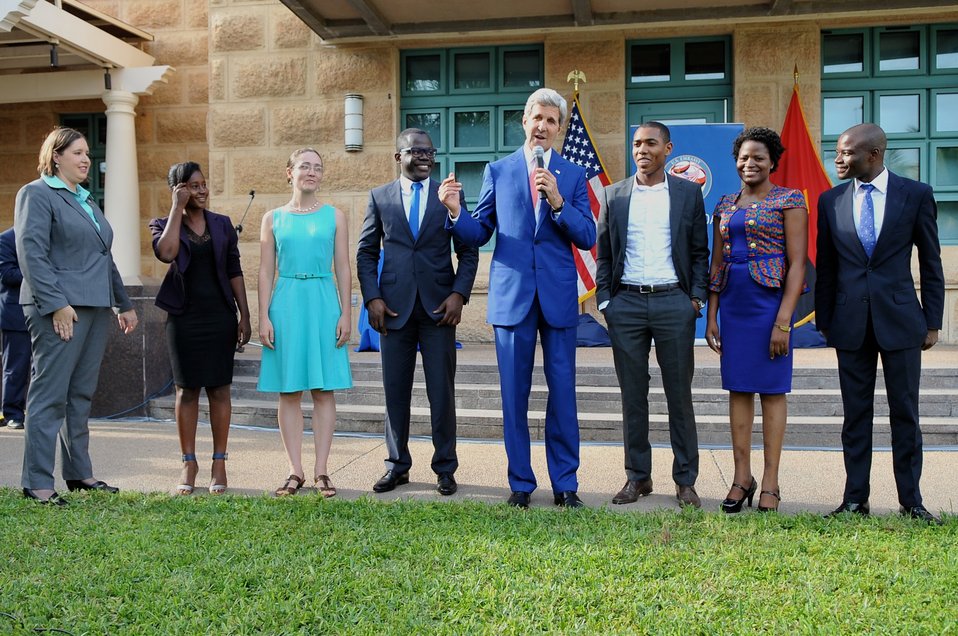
Secretary Kerry Recognizes YALI Members During Visit to Embassy Luanda

U.S. Secretary of State John Kerry recognizes participants in the Young African Leaders Initiative program as he addresses employees and family members at Embassy Luanda during a visit to Angola on May 4, 2014.